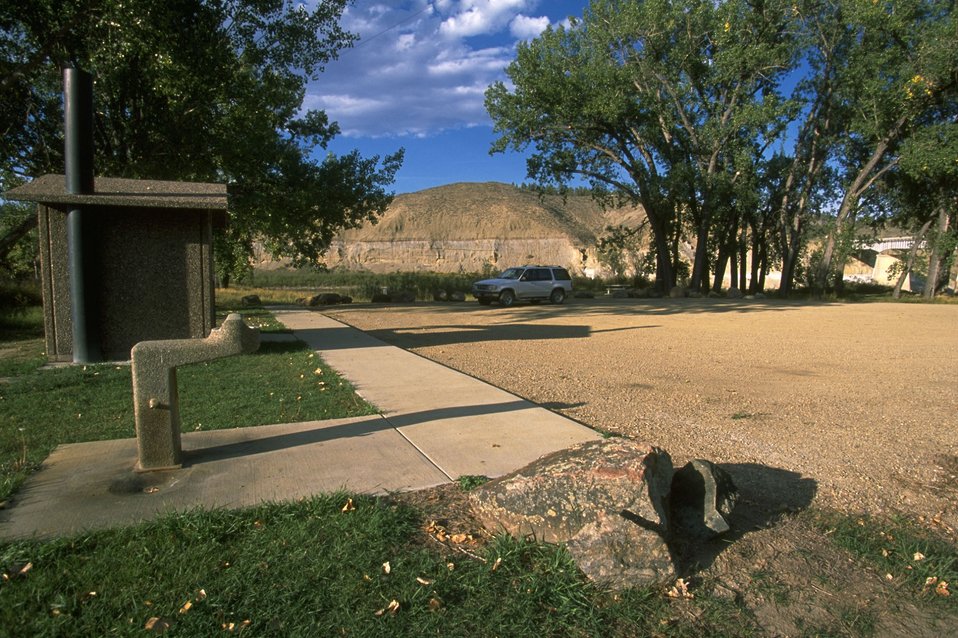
Kipp Recreation Area